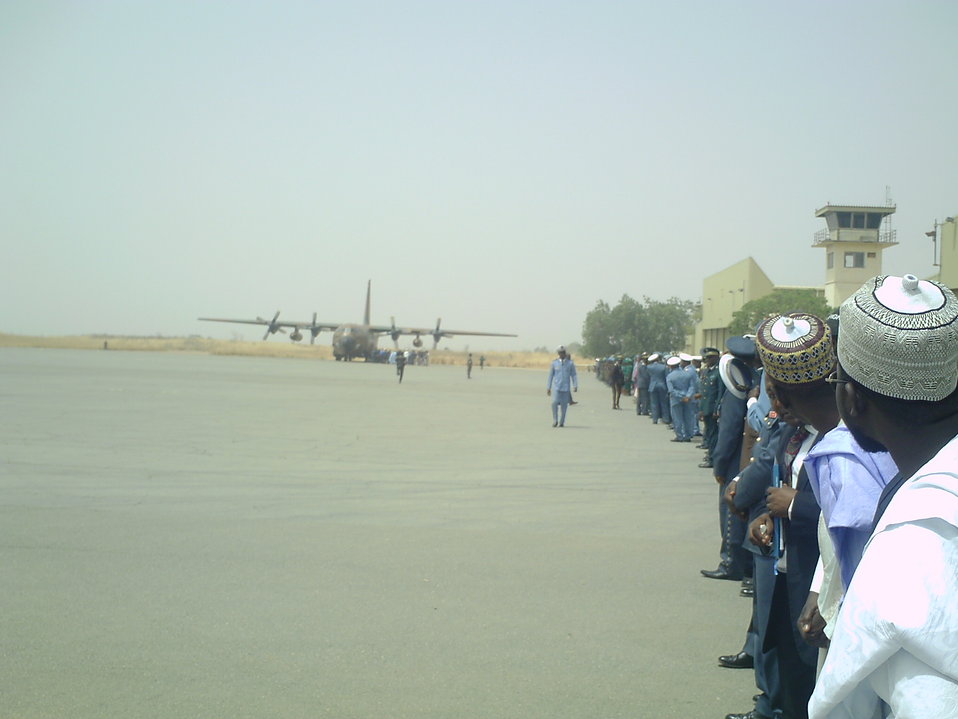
Garoua Defense Base in Cameroon. Military is mobilizing to address poaching problem.